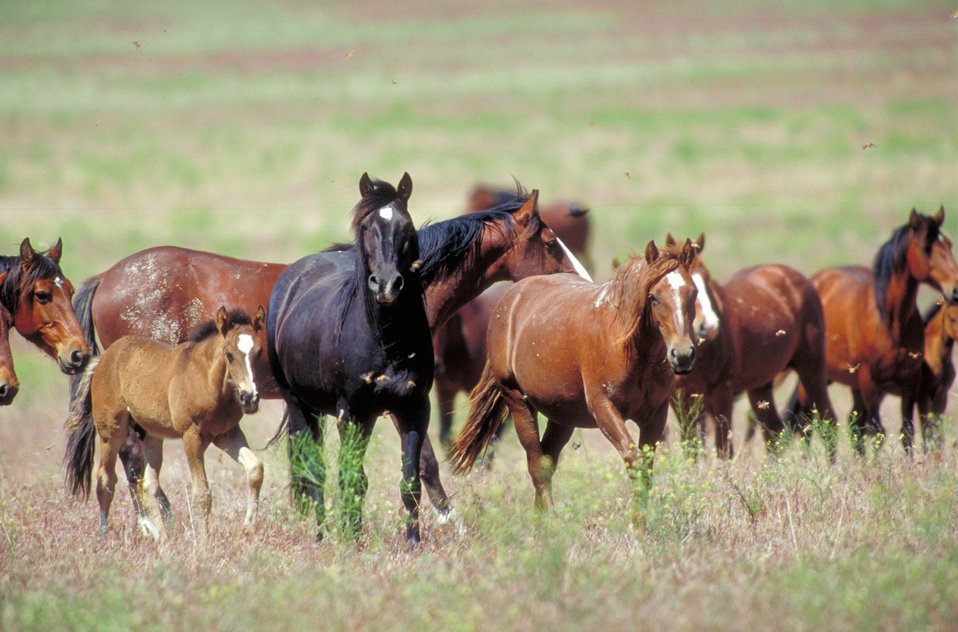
Onaqui Herd near Dugway, Utah.